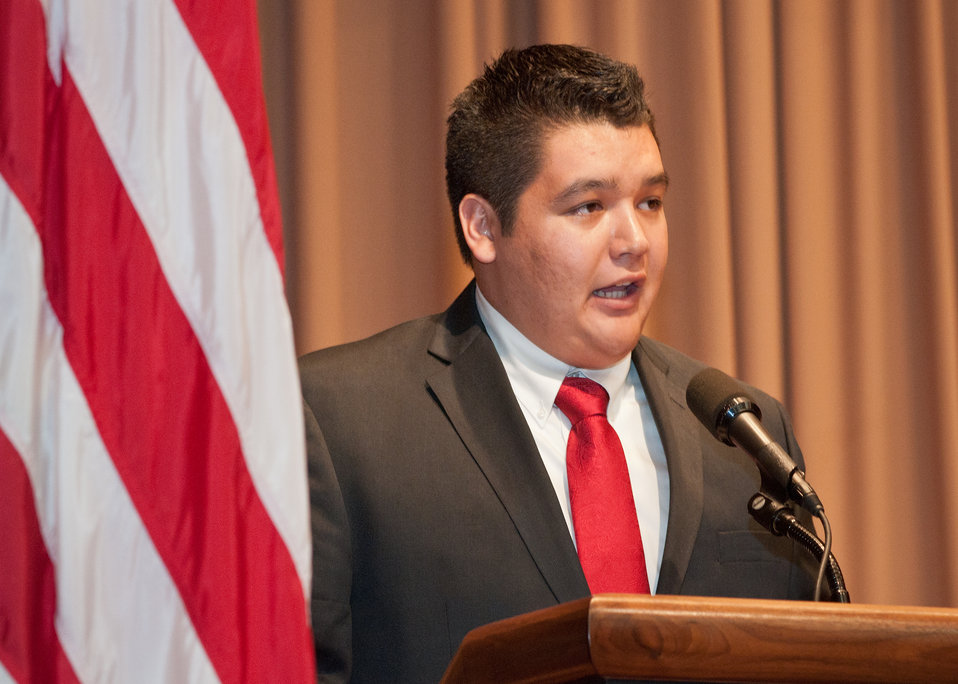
Joshua Moore, University of Arizona, Tucson, Arizona explained his knowledge and experience as a member of the Future Farmer’s of America during the United States Joshua Moore, University of Arizona, Tucson, Arizona explained his knowledge and experience as a member of the Future Farmer’s of America during the United States Department of Agriculture, Native American Indian Heritage Month celebration in Washington, DC, on Wednesday, November 16, 2011, The theme of this year’s event is, “Native Youth: Cultivating the Future.”